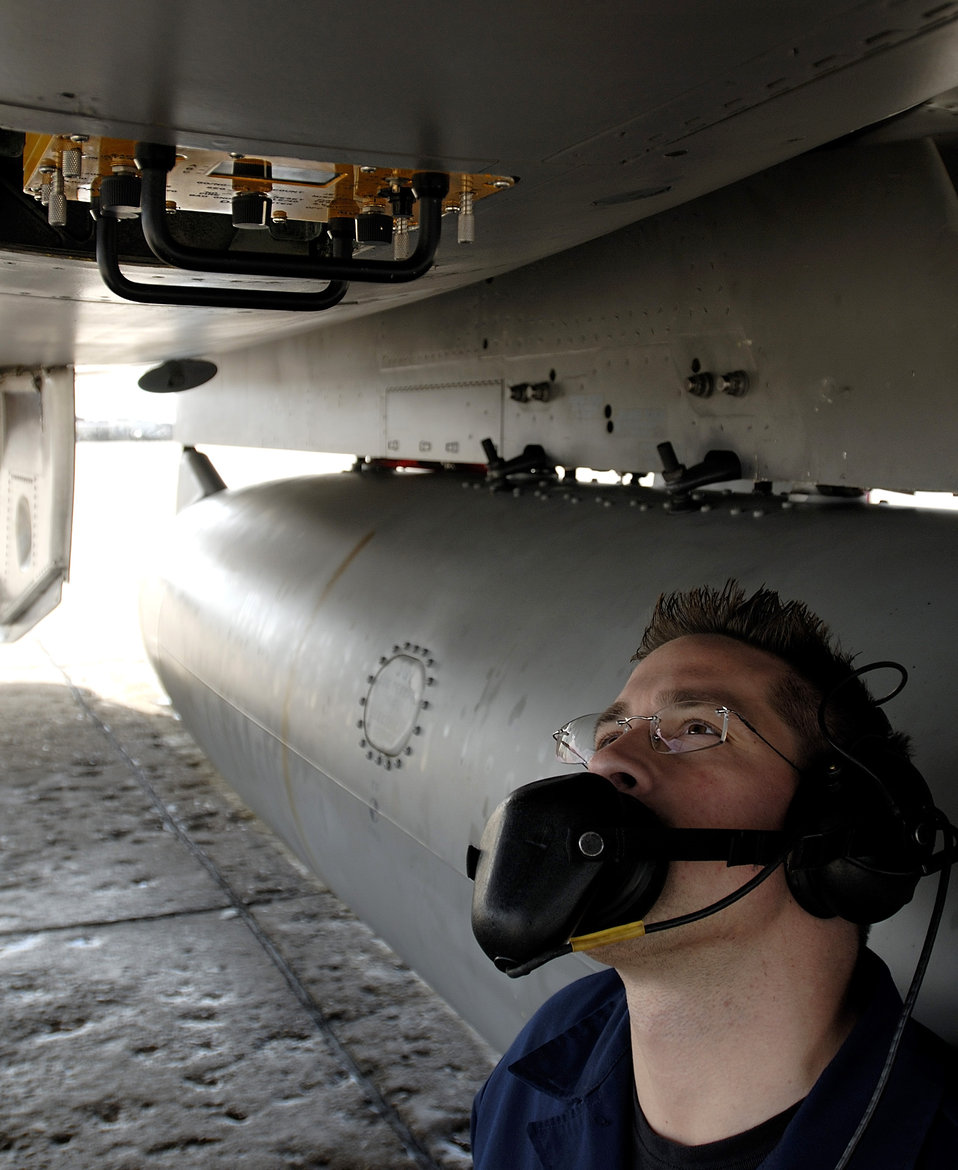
F-15 preventive maintenance

Staff Sgt. James Skonieczny inspects an F-15 Eagle Tuesday, March 14, 2006, at Langley Air Force Base, Va. Sergeant Skonieczny is with the 71st Aircraft Maintenance Unit.